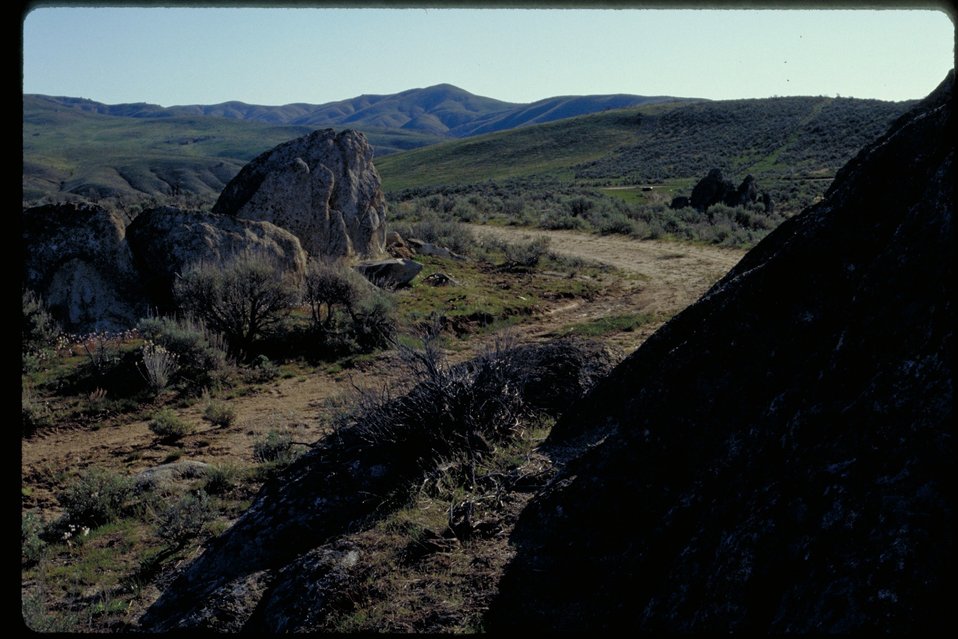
Oregon Trail just east of Bowns Creek Lower Snake River District